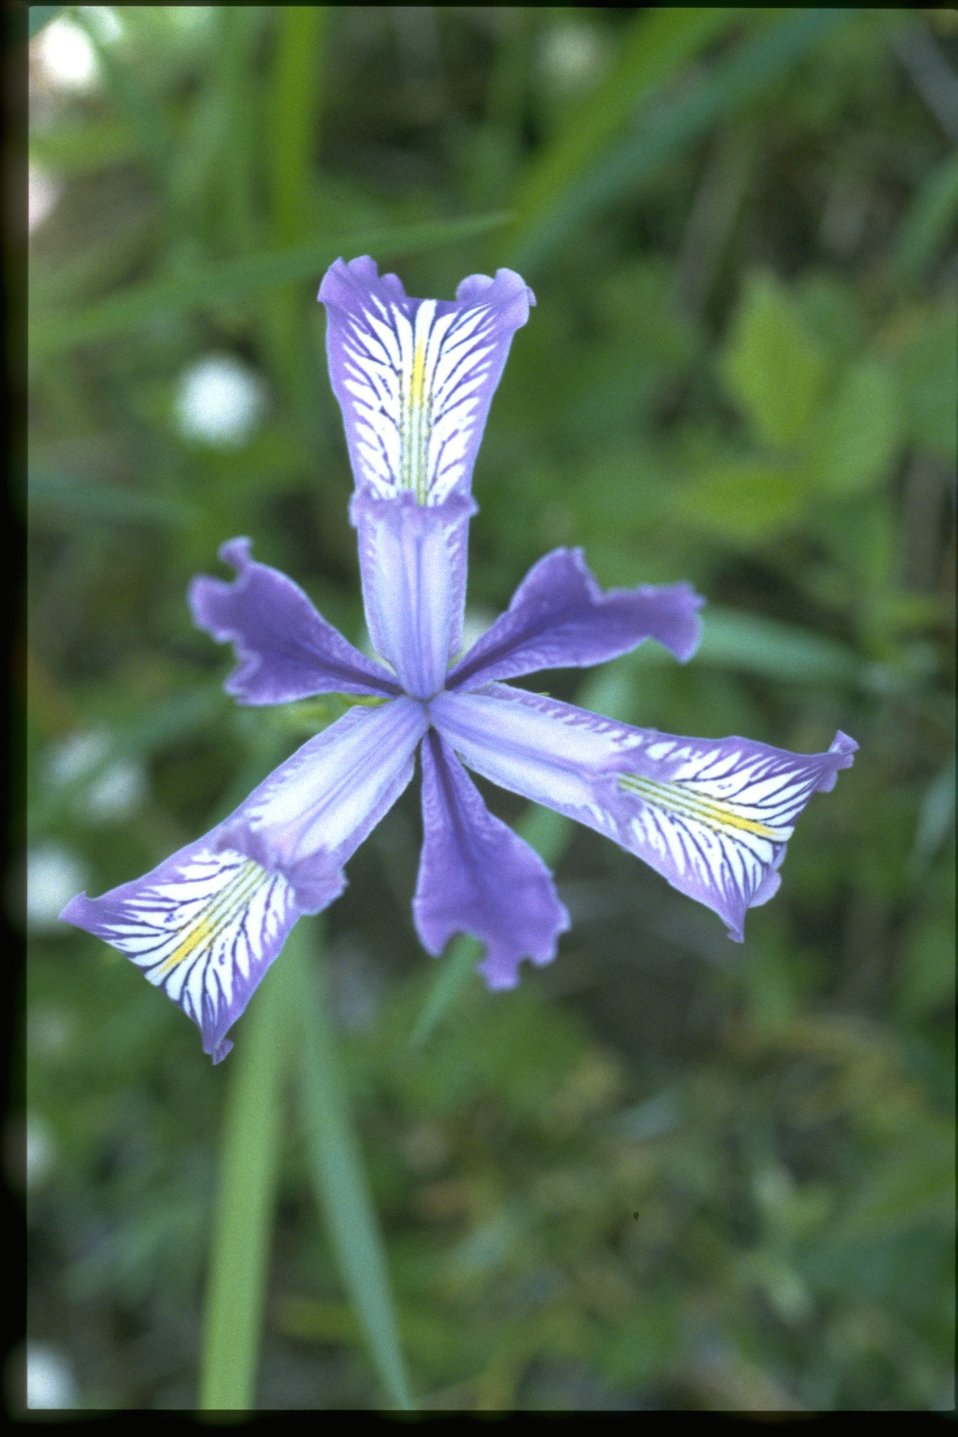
Medium shot of Iris tenax.